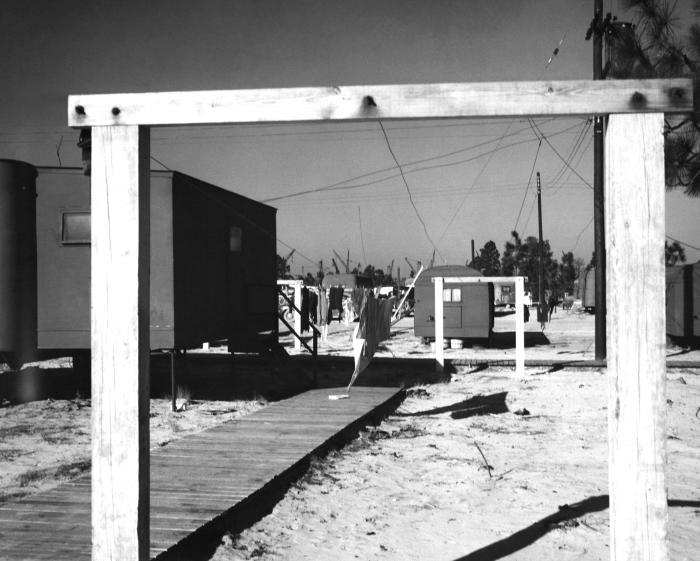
Provided by the Center for Disease Control's (CDC), National Institute for Occupational Safety and Health (NIOSH), this historic 1943 image depicted a view of a North Carolina workcamp trailer park, which was located onsite at an industrial workplace. In this particular view, laundry could be seen air-drying as it hung from make-shift clothes lines.